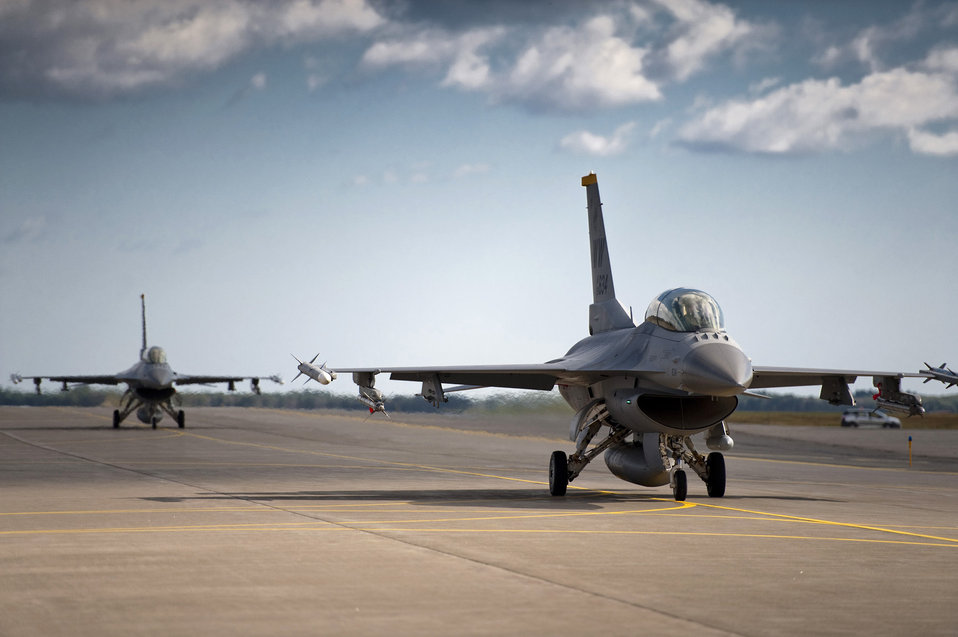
Misawa Airmen earns flight of his life

Capt. Chris Nations, 14th Fighter Squadron standardization and evaluations officer, and Staff Sgt. Bernard Mutz, 35th Civil Engineer Squadron readiness and emergency manager, taxi in an F-16 Fighting Falcon during an incentive flight at Misawa Air Base, Japan, Oct. 22, 2010.